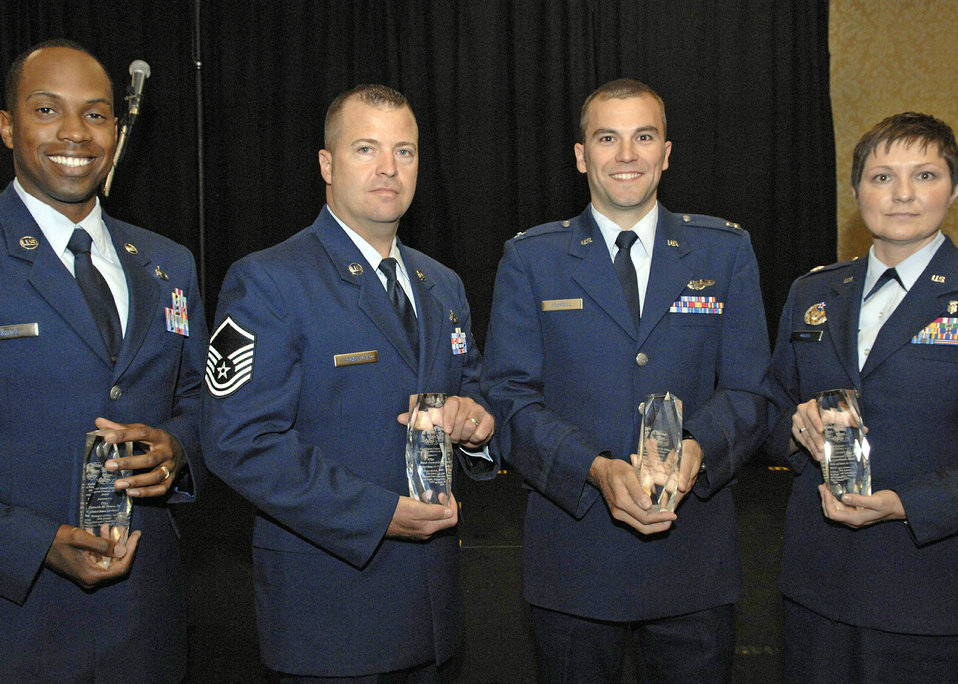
Tuskegee Airmen convention recognizes top Airmen

Tech. Sgt. Kenneth Bruce, Master Sgt. Derek Fromenthal, Capt. Robert Sturgill, and Lt. Col. Jacqueline Mudd pause for a pose with their Tuskegee Airmen awards at the 38th Annual Tuskegee Airmen, Inc., convention here Aug. 7. Sergeant Bruce from Beale Air Force Base, Calif., won the Senior Master Sgt. Margaret Frances Barbour Military Award in the NCO or Airman category; Sergeant Fromenthal from Robins Air Force Base, Ga., won the Chief Master Sgt. Fred Archer Military Award in the senior NCO category; Captain Sturgill from Whiteman AFB, Mo., won the Capt. Robert Williams Military Award in the company grade officer category and Colonel Mudd from Lackland AFB, Texas, won the Gen. Benjamin O. Davis Jr. Military Award in the field grade officer category.